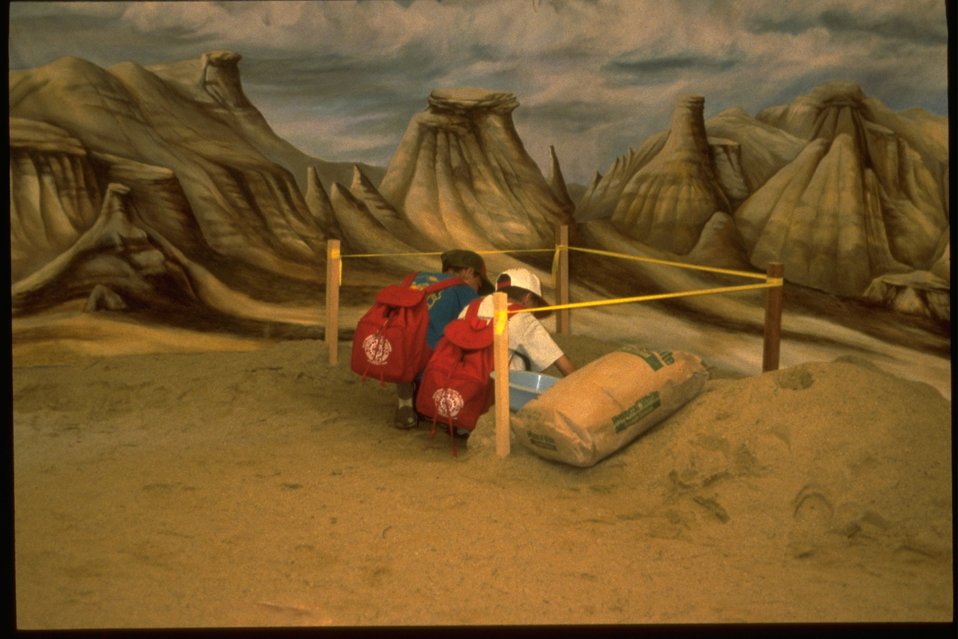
Boy Scouts National Jamboree: BLM paleo exhibit.